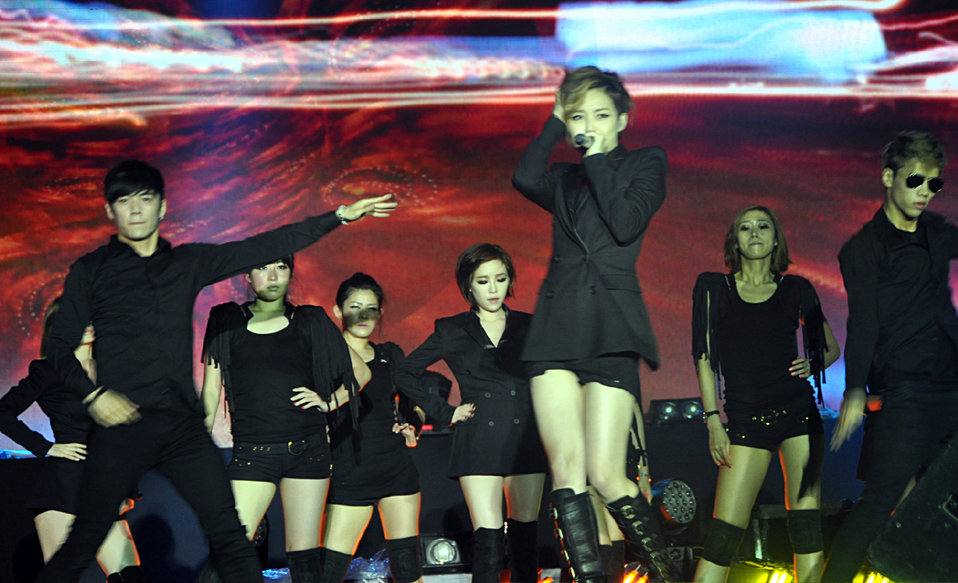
Korean Pop Group Brown Eyed Girls perform at MTV EXIT concert in Hanoi